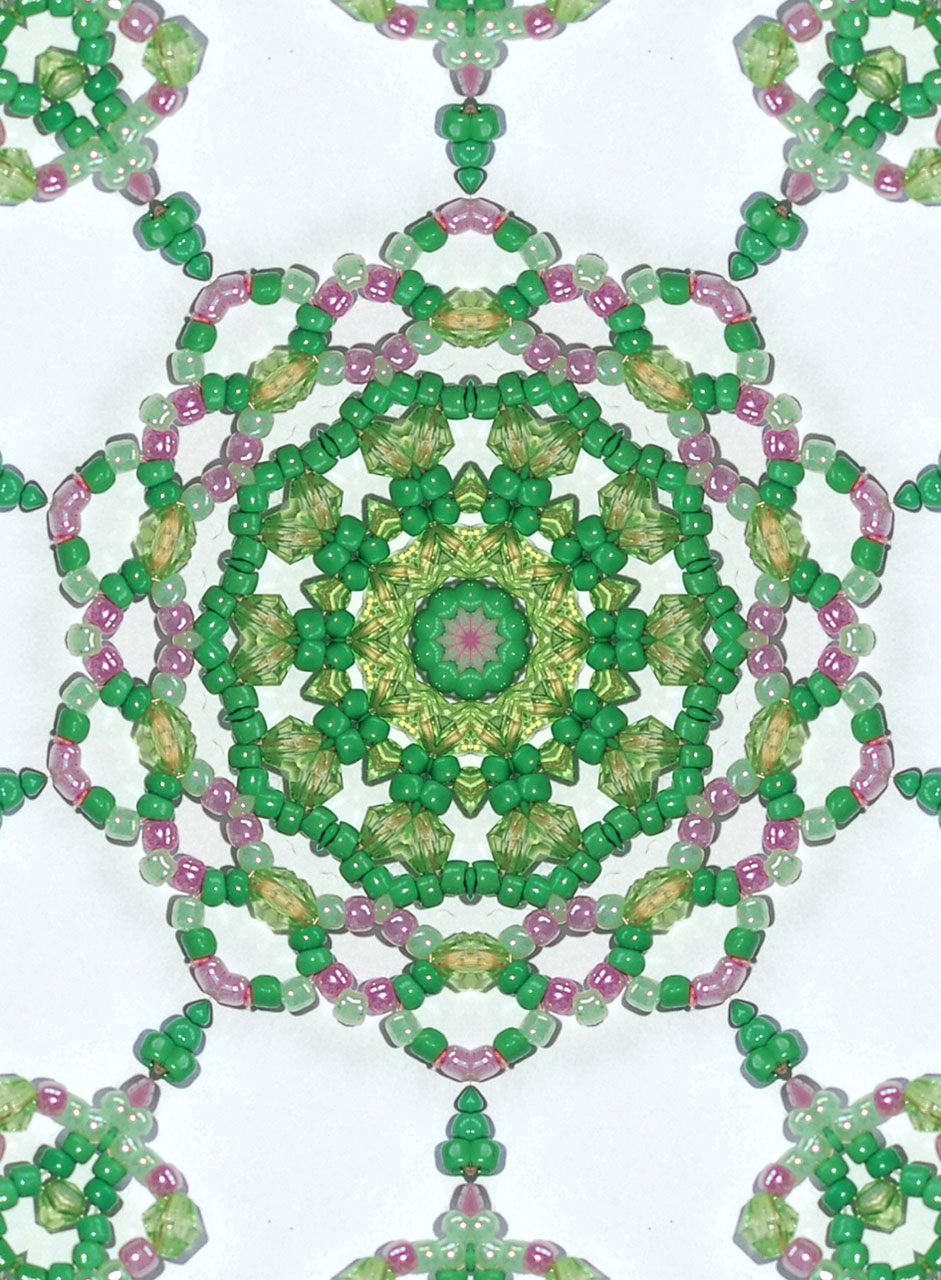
Beaded green pattern

Green and pink pattern - beads.